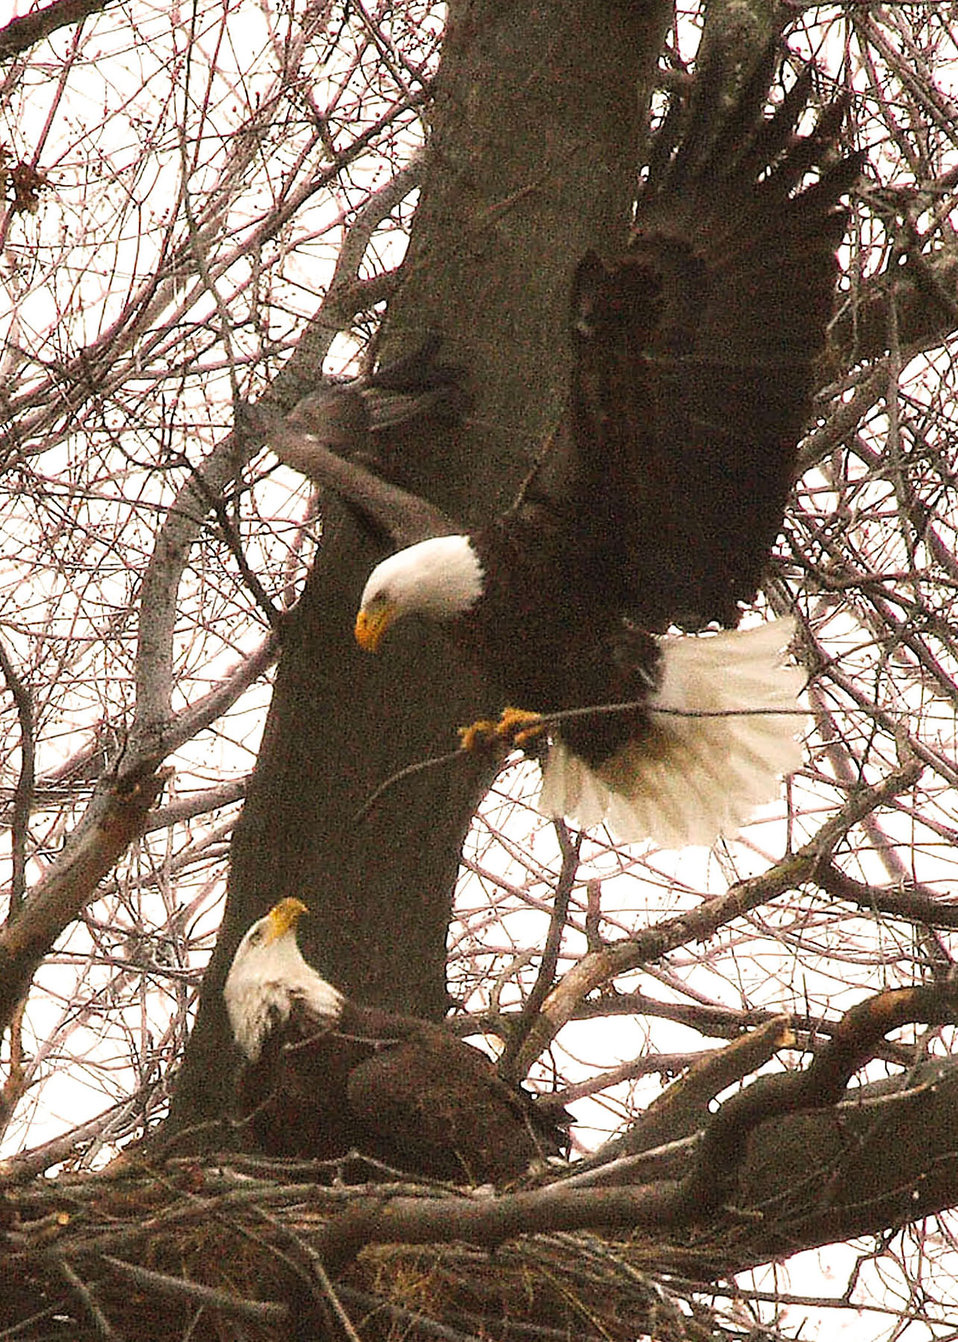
Bald eagle at its nest

A bald eagle bringing sticks to its nest at John Heinz National Wildlife Refuge in Philadelphia, Pennsylvania.